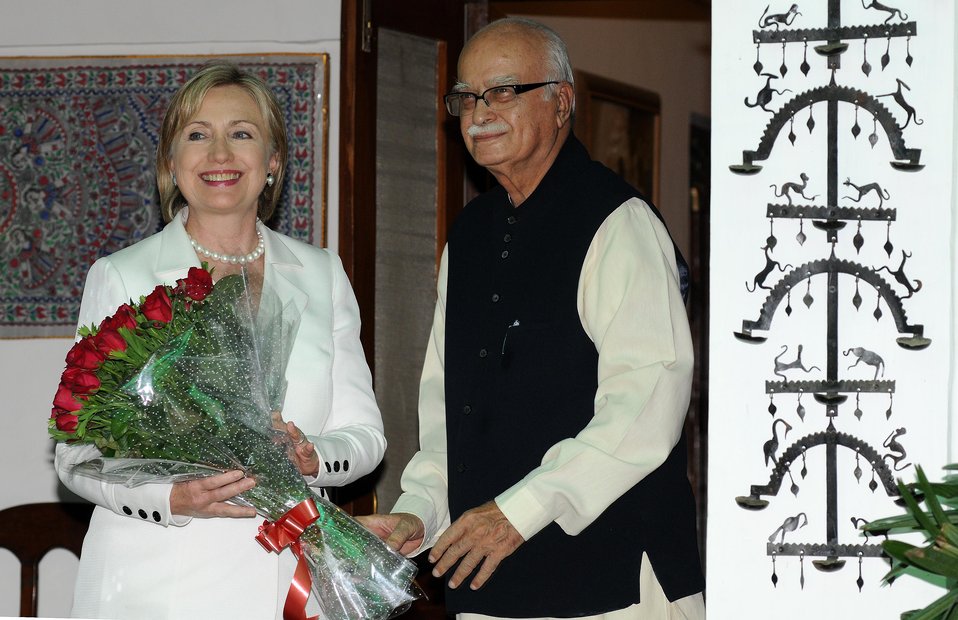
Secretary Clinton Meets With Indian Opposition Leader

Leader of the Opposition L.K. Advani greets U.S. Secretary of State Hillary Rodham Clinton outside of his residence in New Delhi, India July 20, 2009